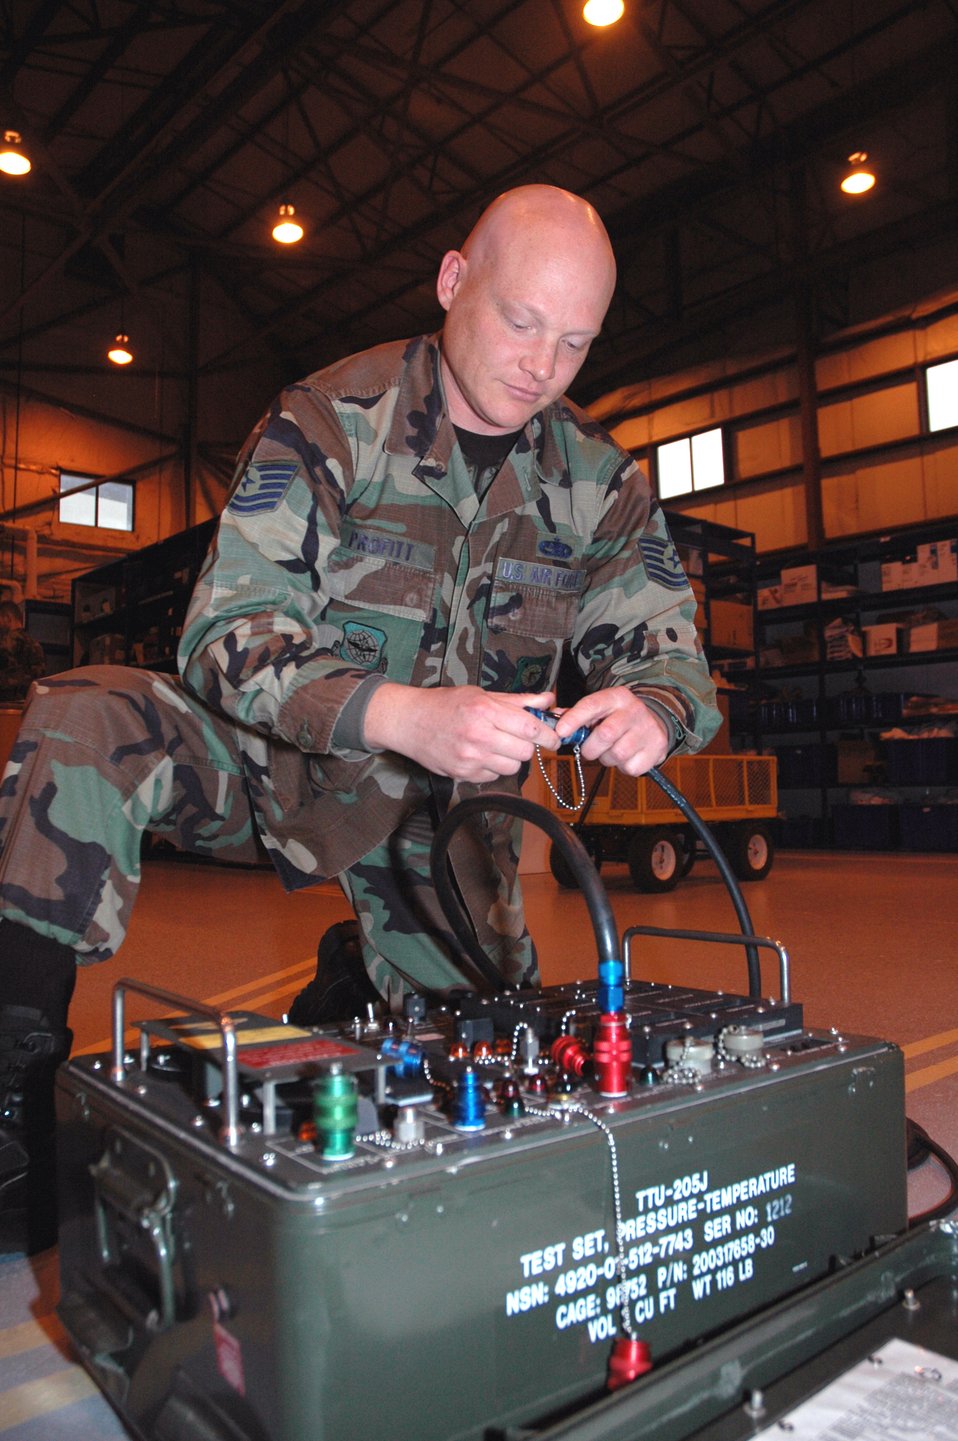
Amputee Airman overcomes cancer

Tech. Sgt. Matthew Profitt inspects a TTV-205 pressure tester that checks the C-5's pitot-static system for leaks. A pitot-static system supplies air pressure sensations directly to differential pressure flight instruments for the measurement of aircraft speed and altitude. In 2003, the Dover Air Force Base reservist's leg was amputated when he was diagnosed with epithelioid sarcoma, a malignant soft tissue tumor. He is a 512th Aircraft Maintenance Squadron guidance and control section technician.